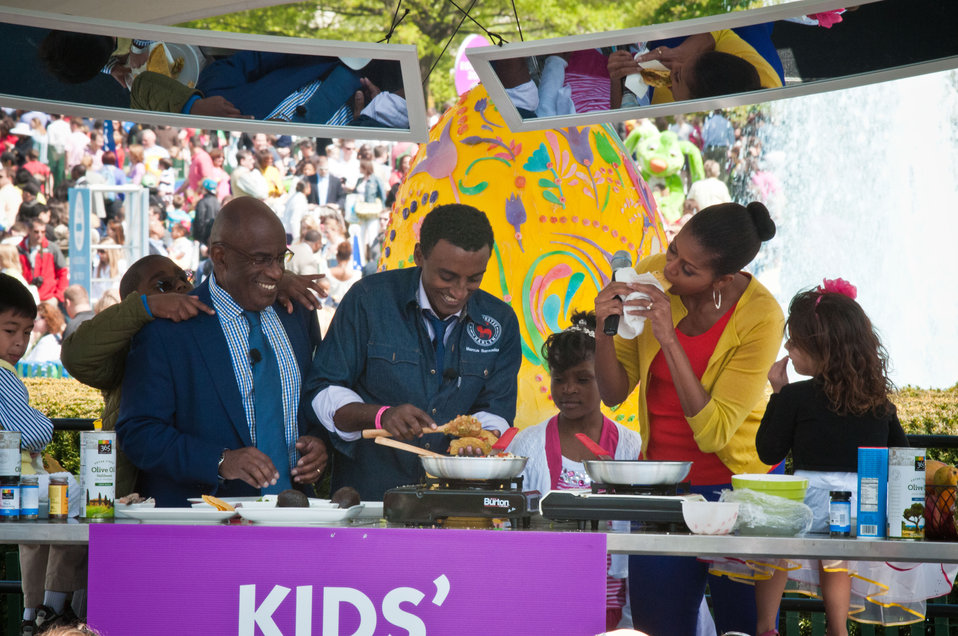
Weather and feature anchor NBC TODAY Show Al Roker (left), Chef Marcus Samuelsson (center) and First Lady Michelle Obama (right), prepare Shrimp Salad and Vegetable Tacos at the “Kids’ Kitchen” activity center led by the White House chefs and celebrity guest chefs at the White House Easter Egg Roll Monday, April 9, 2012 in Washington, D.C. This years Easter Egg Roll is the 134th year of the largest annual public event at the White House. This year’s theme is “Let’s Go, Let’s Play, Let’s Move!” The theme is the emphasis of First Lady Michelle Obama’s Let’s Move initiative promoting health and wellness and encouraging children to lead healthy and active lives to solve the problem of childhood obesity. The activity center was built around the White House Kitchen Garden.